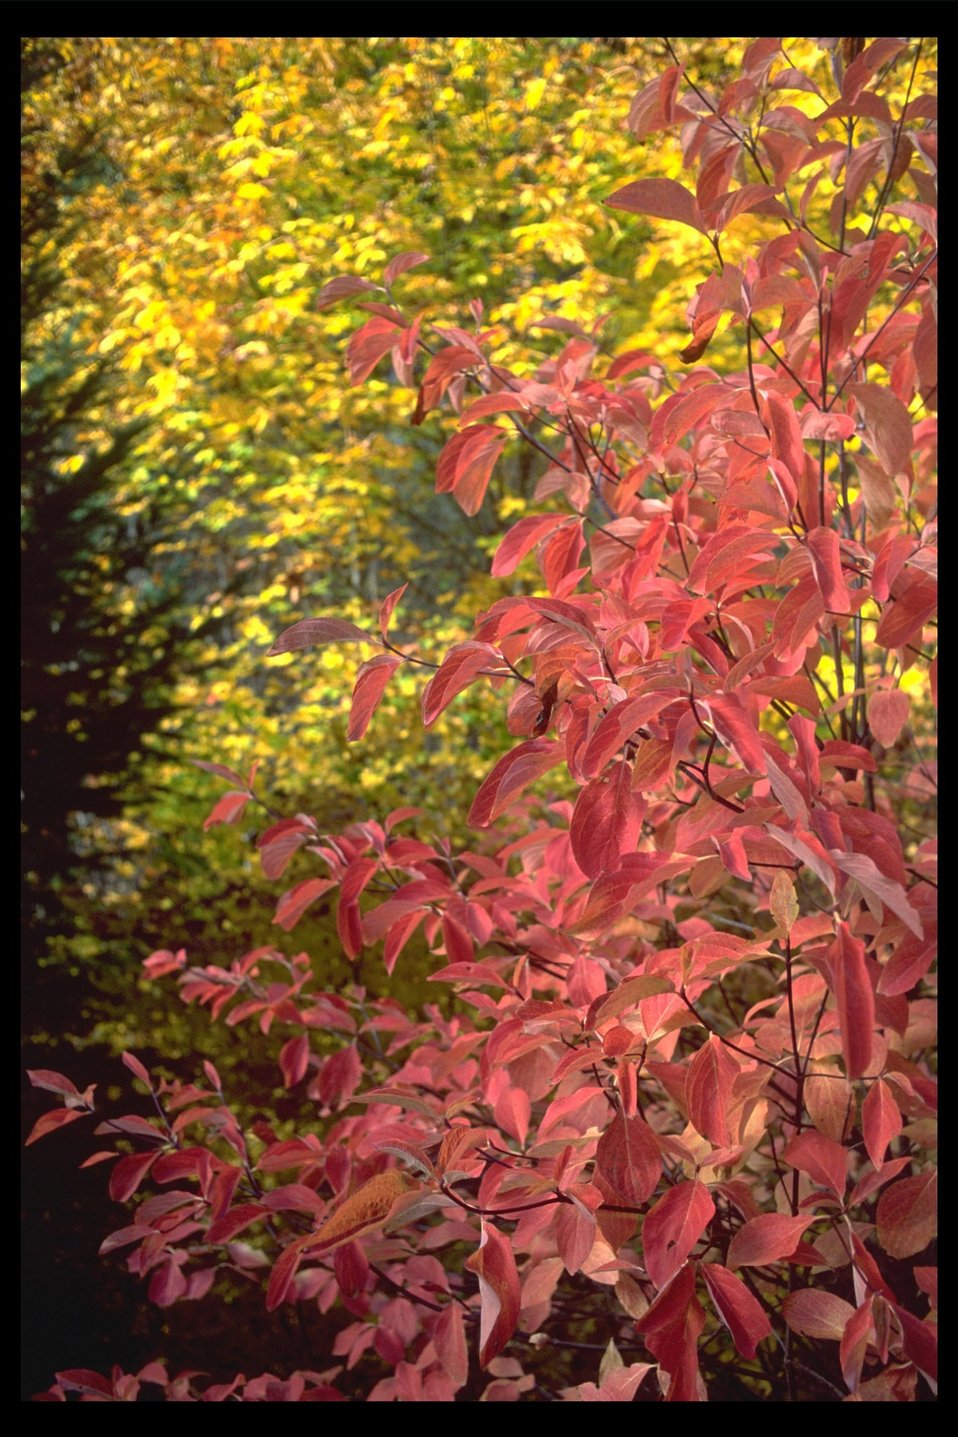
Dogwood along Timber Creek.